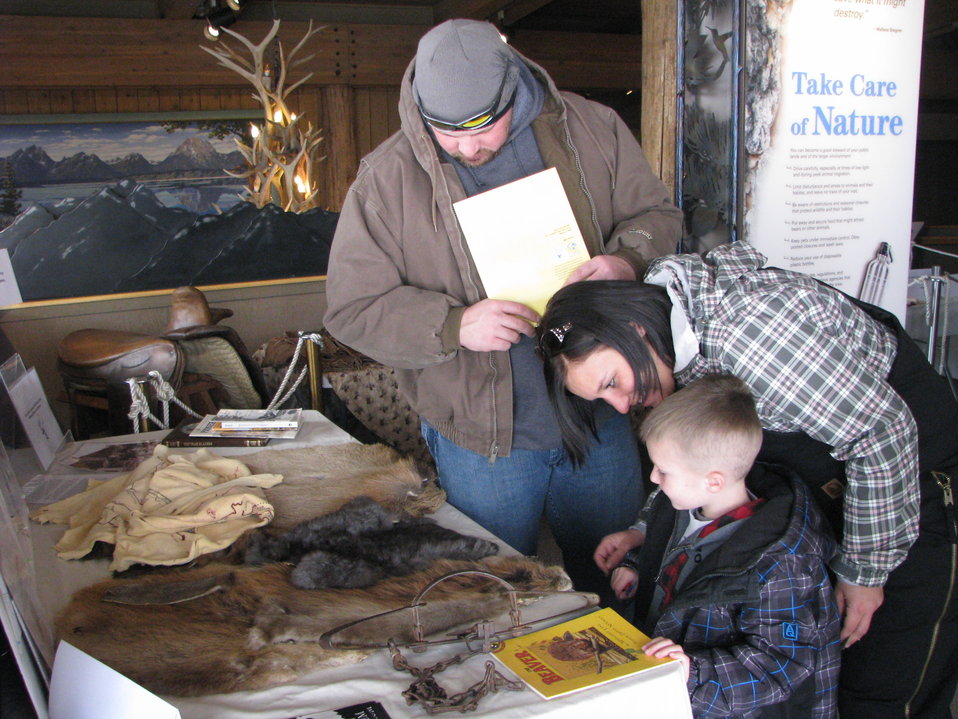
Family Fun

A young family at the Jackson Hole & Greater Yellowstone Visitor Center looks at a trapper display on loan from the Jackson Hole Historical Society & Museum. The display was set up during a special National Elk Refuge program that celebrated history and the Refuge's centennial in 2012.